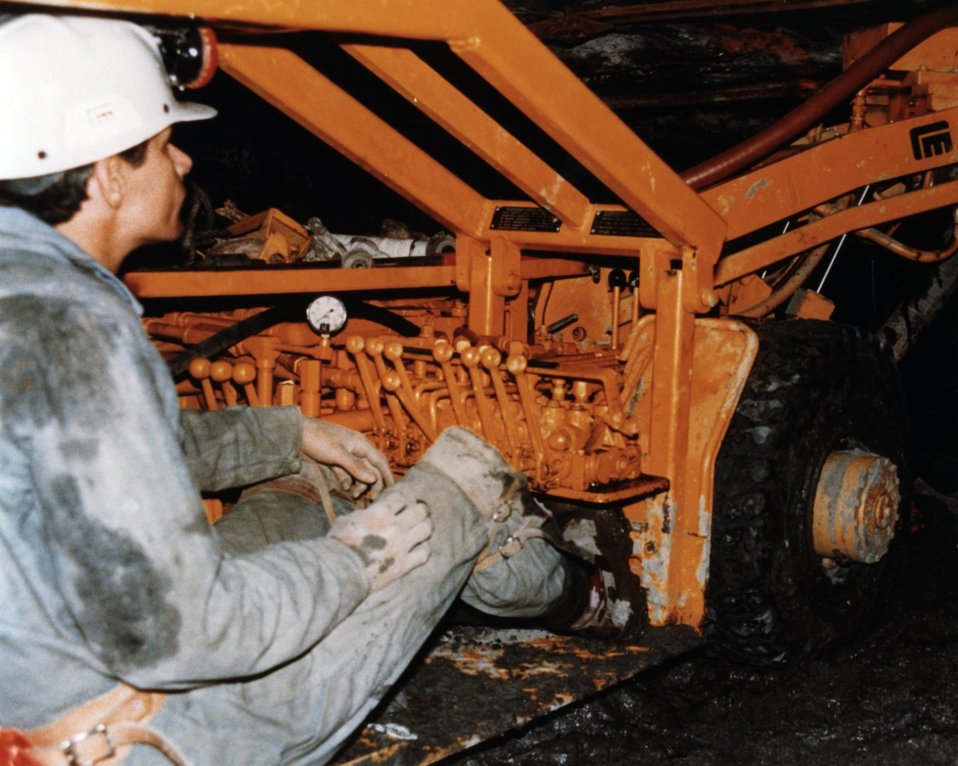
ROOF DRILL FROM REAR/SIDE SHOWING OPERATOR AND THE DRILL HEAD (UNDERGROUND).

THE PREDOMINANT UNDERGROUND MINING METHOD IN THE U.S. IS THE 'ROOM AND PILLAR' METHOD, A TERM DERIVED FROM THE MINING PATTERN OF A SERIES OF EXCAVATED AREAS (ROOMS) AND UNEXCAVATED AREAS (PILLARS) WHICH ARE LEFT TO SUPPORT THE ROOF. A MAJOR INCREASE IN PRODUCTION AND EFFICIENCY COULD BE ACHIEVED BY INTEGRATING THE ROOF SUPPORT AND EXTRACTION FUNCTION.